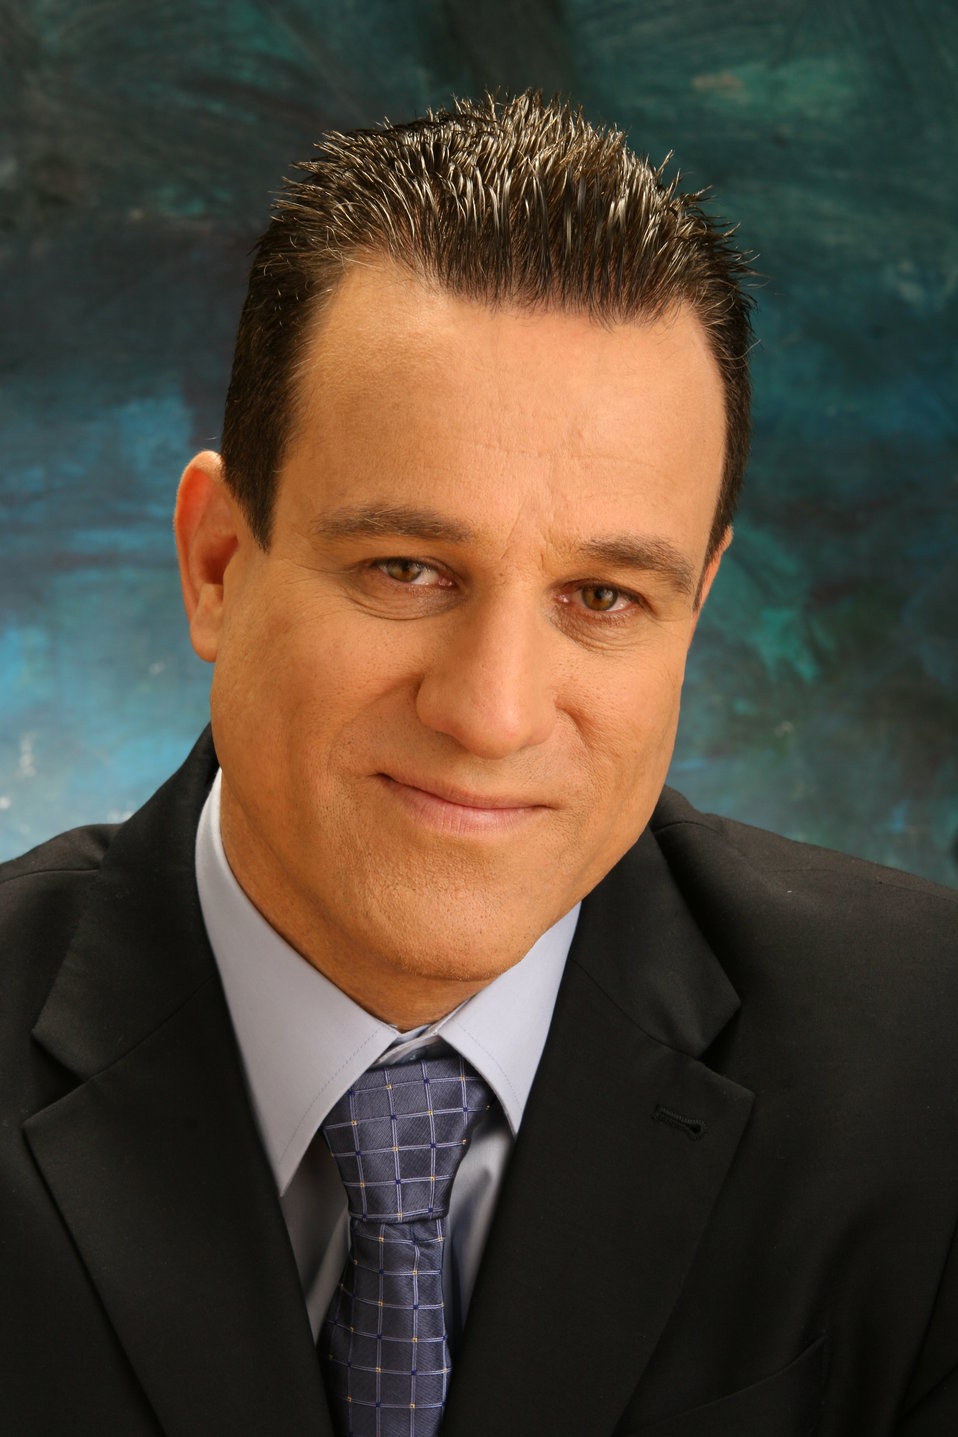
Yori Geiron עברית: יורי גיא-רון